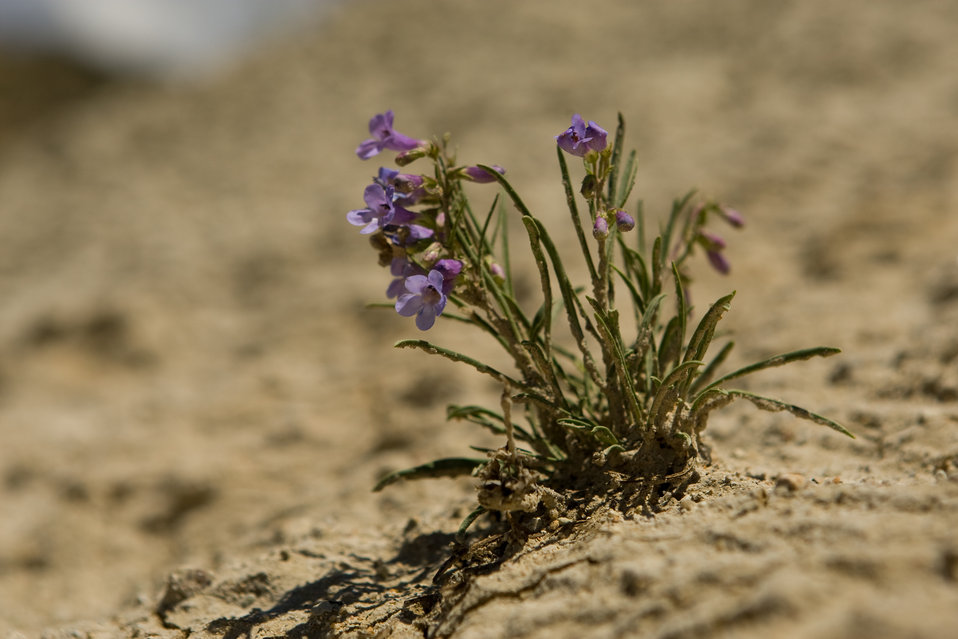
Colorado Rare Plant Conservation Initiative

The Colorado Rare Plant Conservation Initiative (RPCI) is a partnership of 23 statewide and regional agencies, private organizations, and academic institutions working to conserve 121 rare plants in Colorado. As part of these efforts the group developed the Colorado Rare Plant Conservation Strategy, developed Best Management Practices to reduce energy development impacts, addressed climate change, and developed focused strategies for the conservation of individual species at eight priority landscapes. The group has also worked to coordinate volunteer efforts for plant conservation across the state.